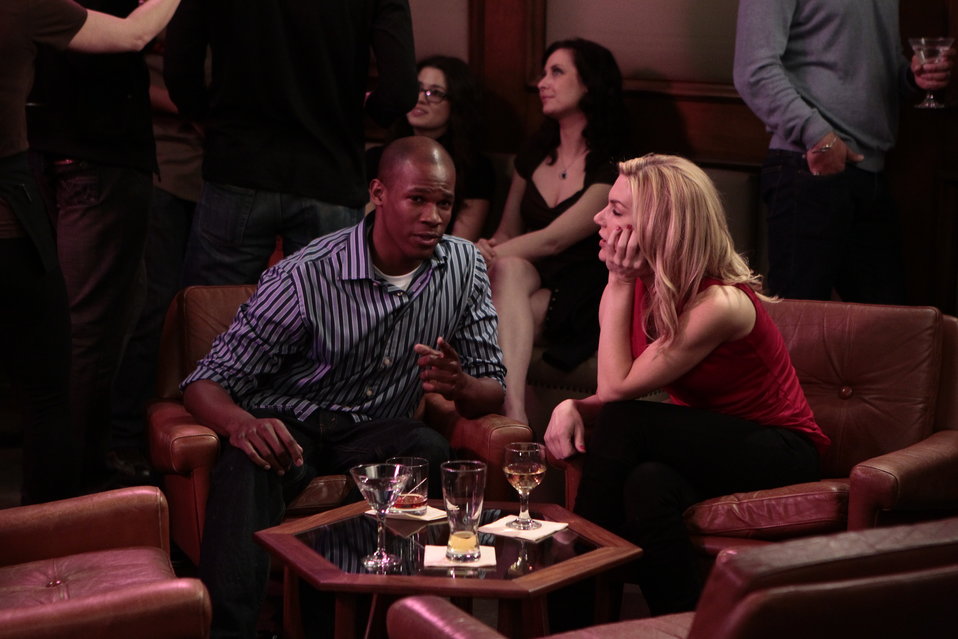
Vandenberg AFB Airman appears on sitcom

Airman 1st Class Marcus McGinnis performs his scene with actress Rhea Seehorn Feb. 22, 2012, during filming of